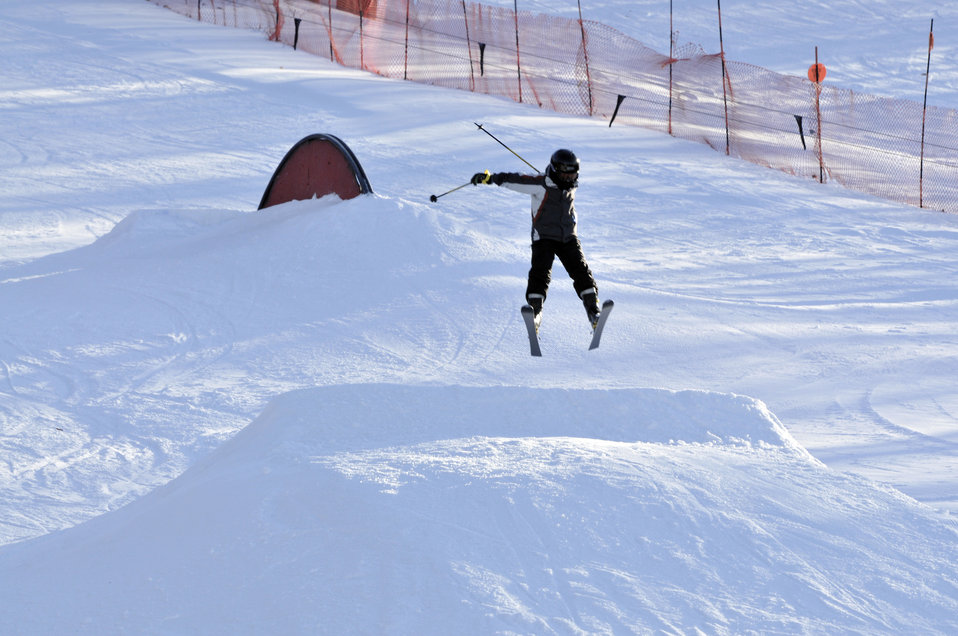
Visitors to the Monongahela National Forest in Davis, West Virginia enjoy ski jumping on January 28, 2010. National Forests offer visitors access to a diversity of outdoor winter recreational opportunities such as skiing, ski jumping, fishing, and Nordic walking. Visitors can view wildlife, scenic vistas, and explore historic places.